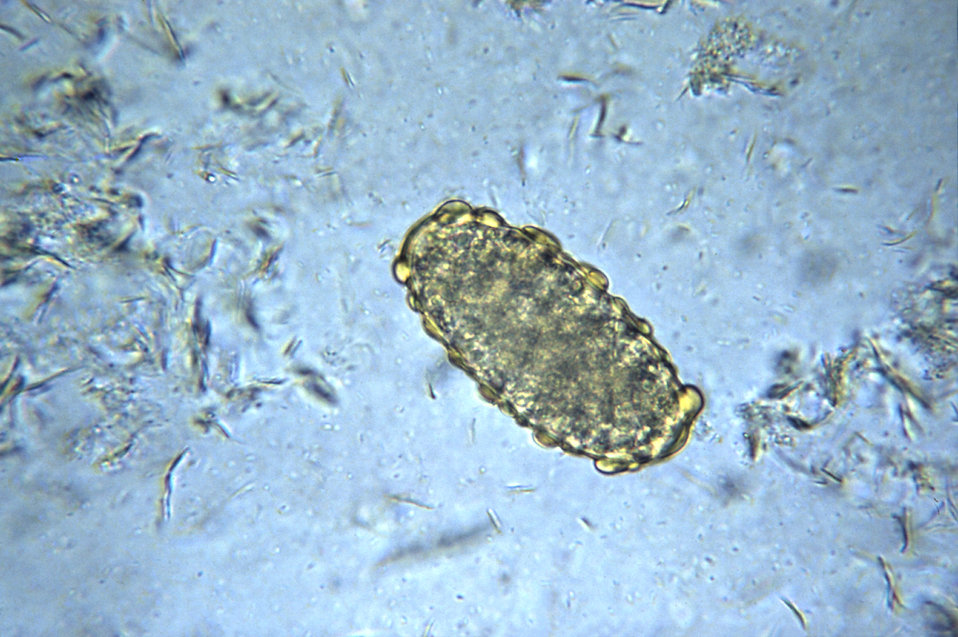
This micrograph reveals an unfertilized egg of the round worm Ascaris lumbricoides; Mag. 400X.